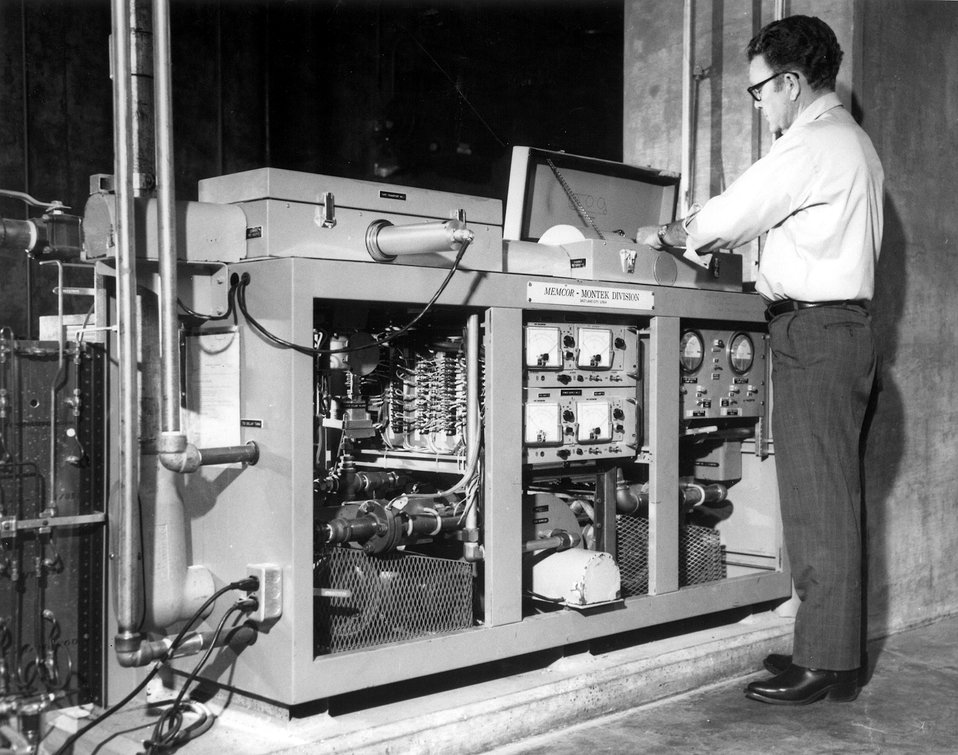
Filtering and testing sampling station for the Advance of Test Reactor off-gas stack effluent. Circa 1974.